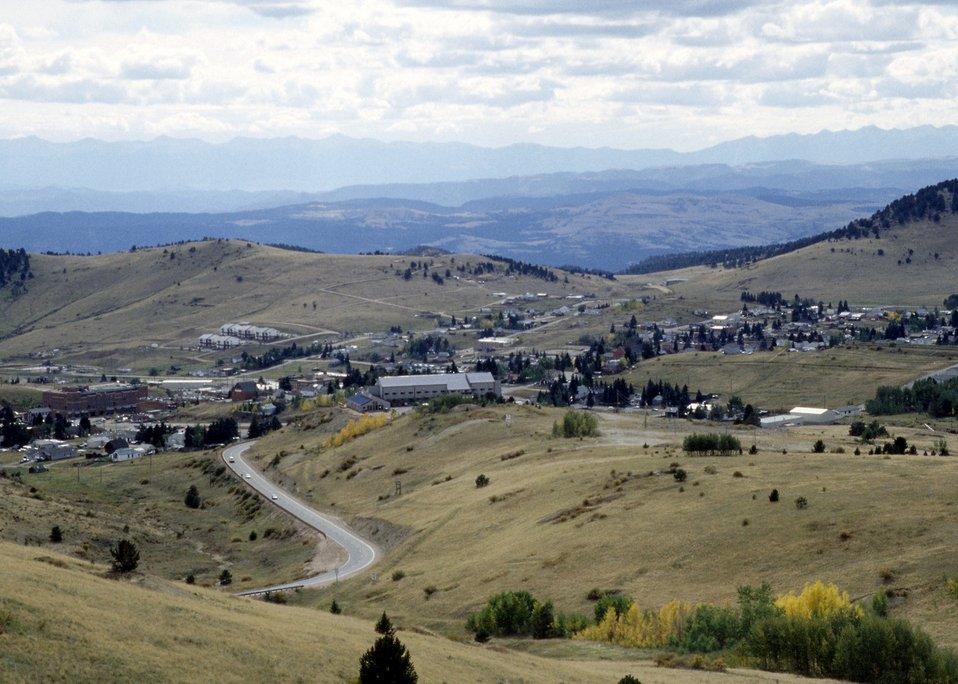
Wilbur Loop